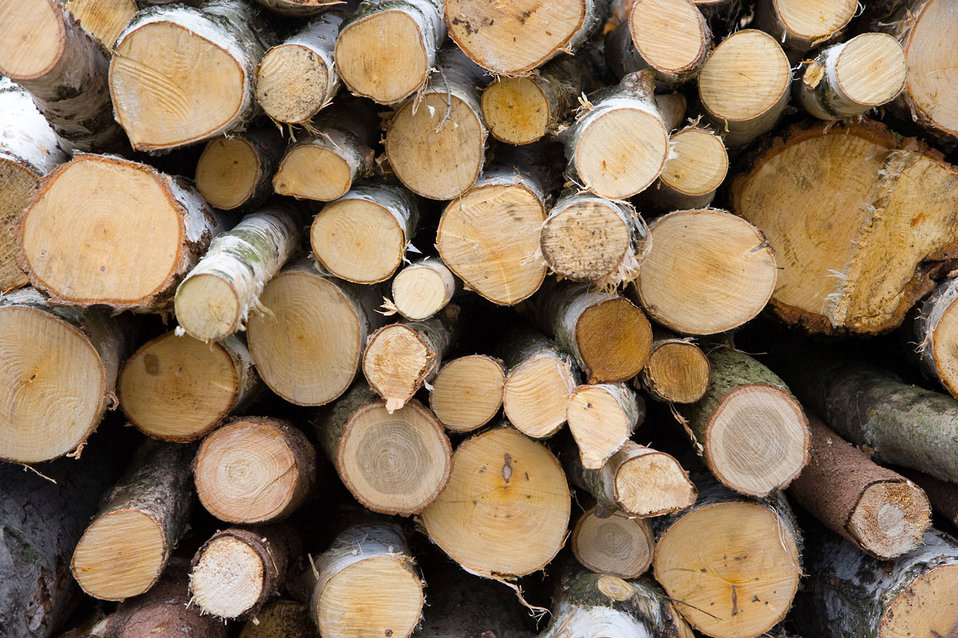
Firewood

A pile of firewood.